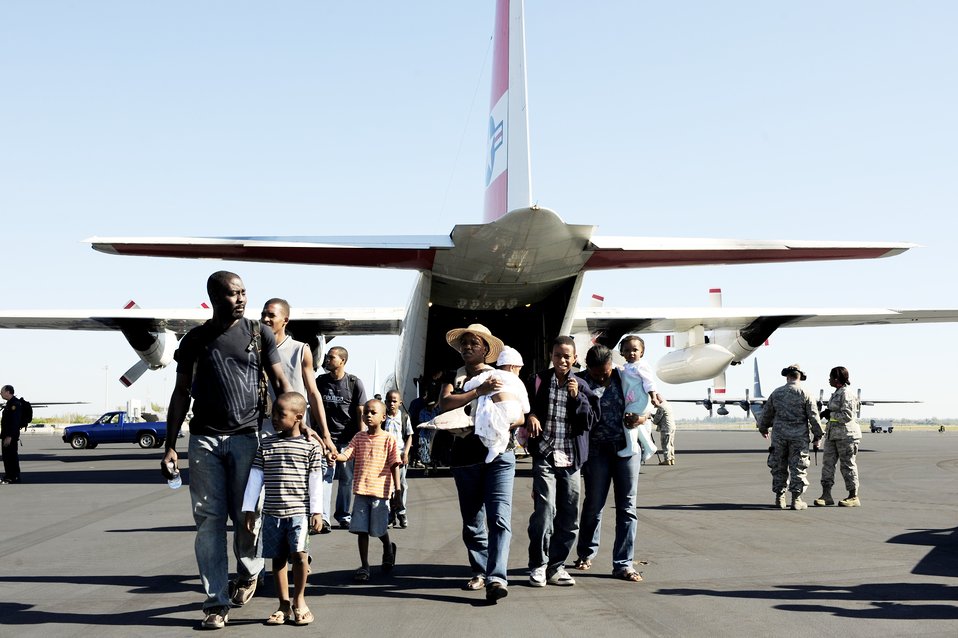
On solid ground

Haitian-American evacuees exit a U.S. Coast Guard C-130 at Homestead Air Reserve Base, Fla., Jan. 20, 2010. On Jan. 12, a devastating earthquake hit the country of Haiti, leaving countless people without homes. Since then, Homestead ARB has quickly become a major hub for evacuees in need of aid.